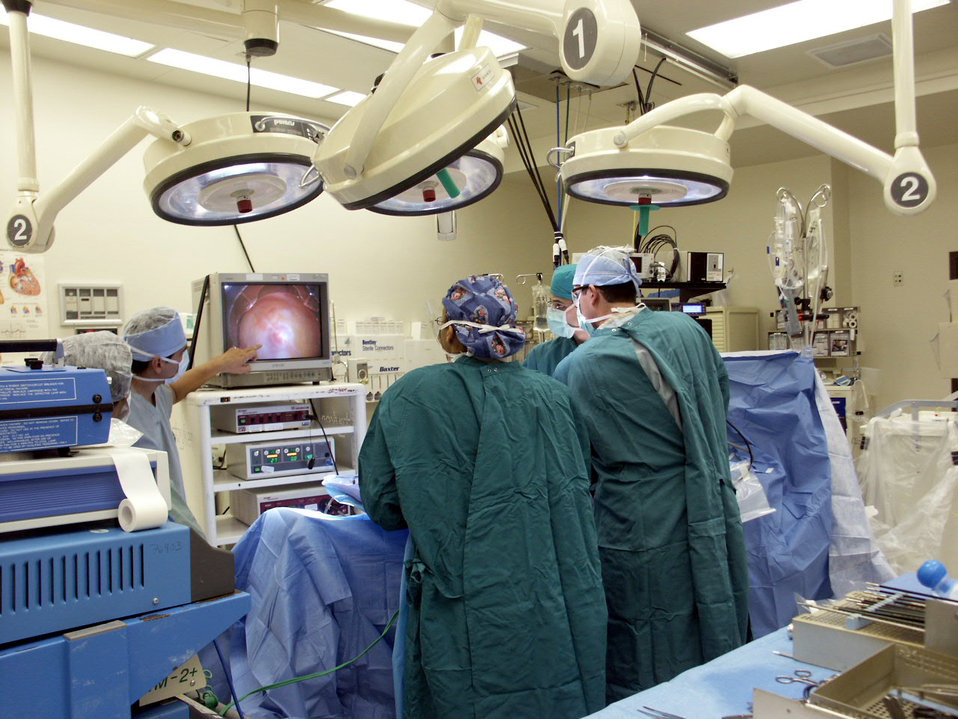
'Scopes' get airmen quickly back on track

LACKLAND AIR FORCE BASE, Texas -- Wilford Hall Medical Center surgeons perform a laparoscopic appendectomy on a basic trainee while Dr. Delio Ortega (left), a general surgery resident, points out which direction the surgeons need to move inside the patient's abdomen.